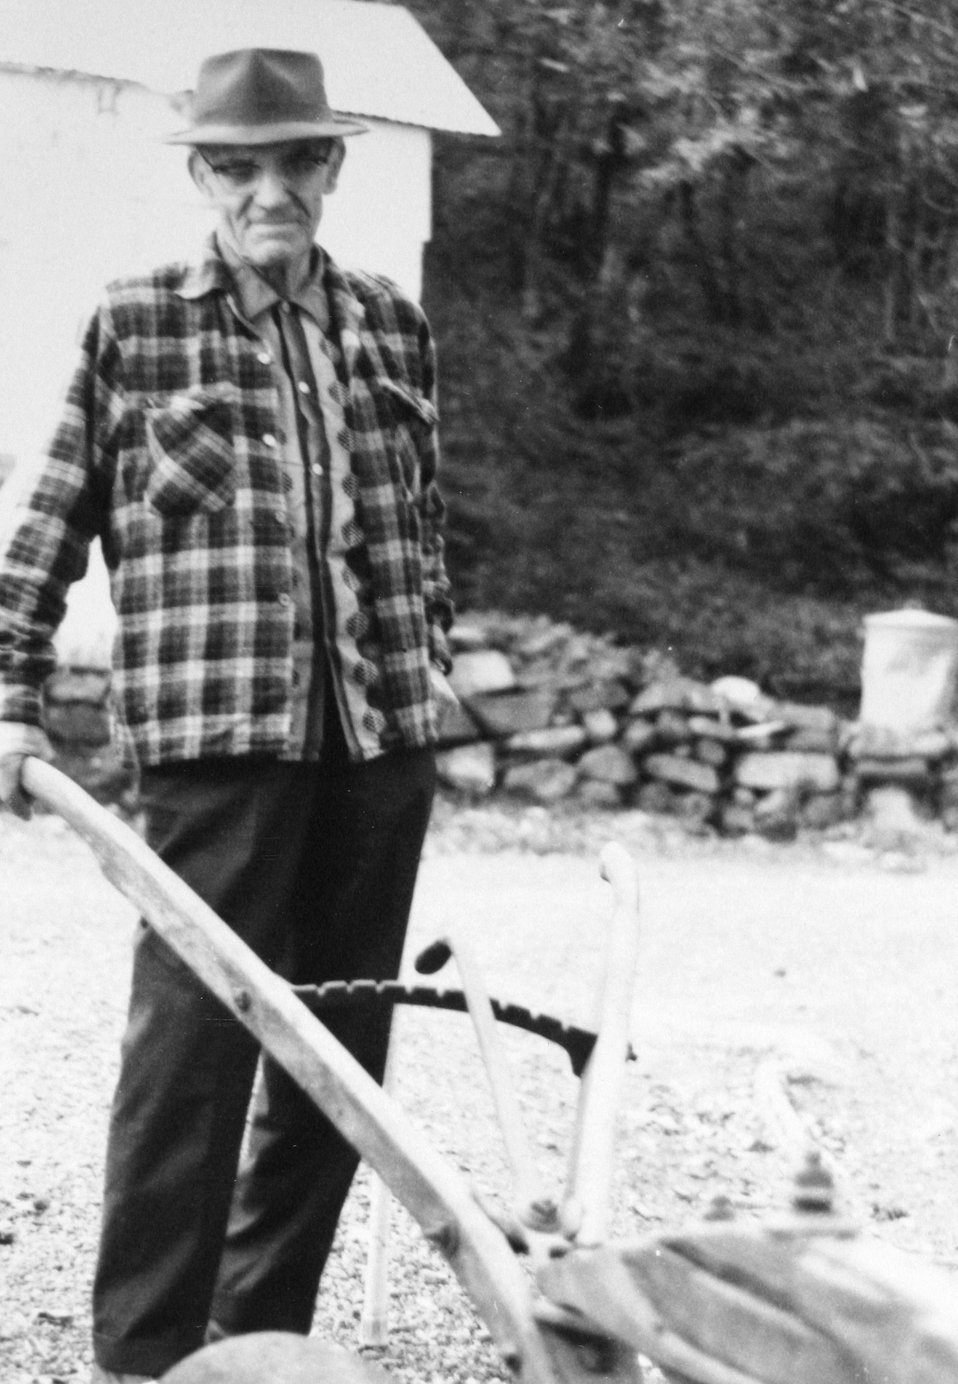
Ivin Billings C. 1977